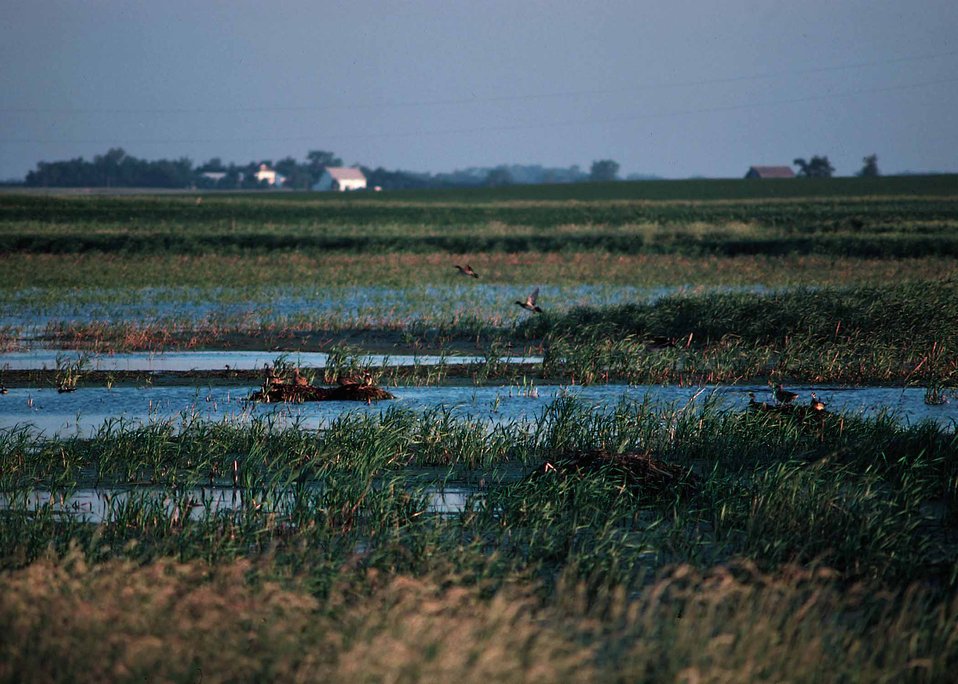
Wetland in north-central Iowa.